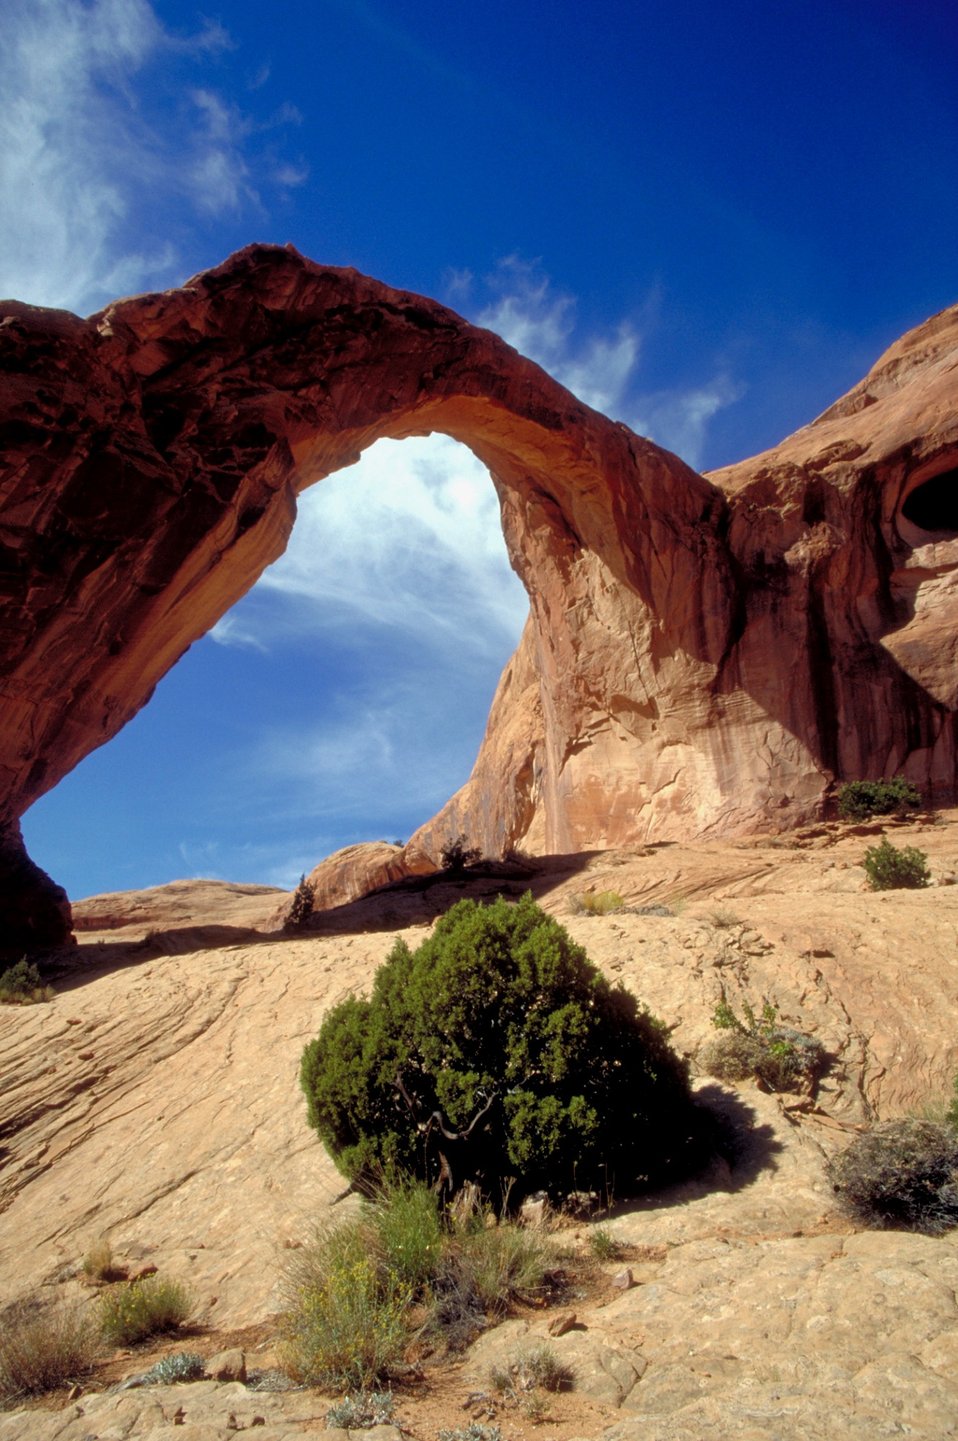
Corona Arch near Moab, Utah.